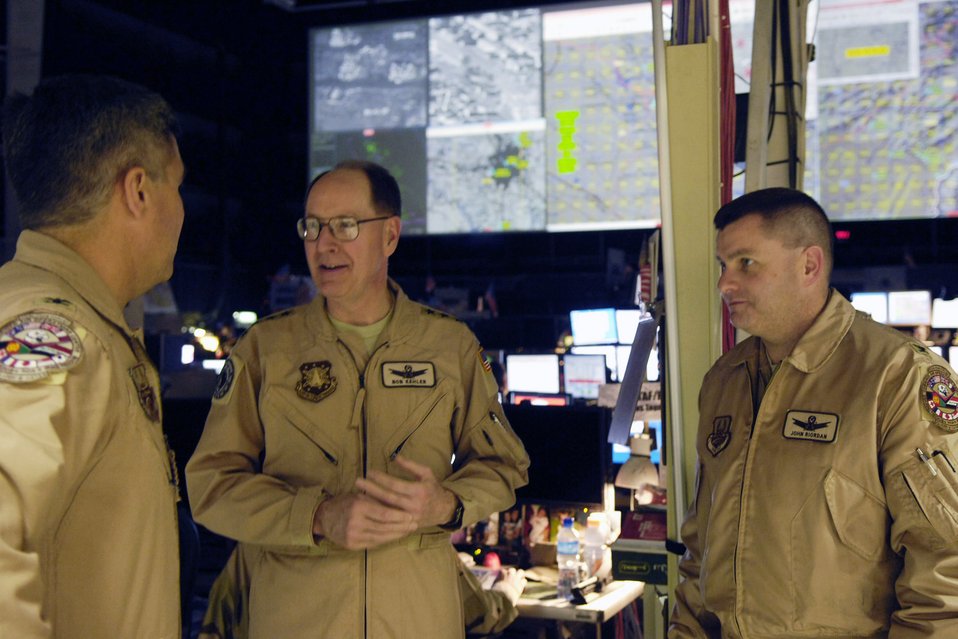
AFSPC commander sees space assets in action

Gen. C. Robert